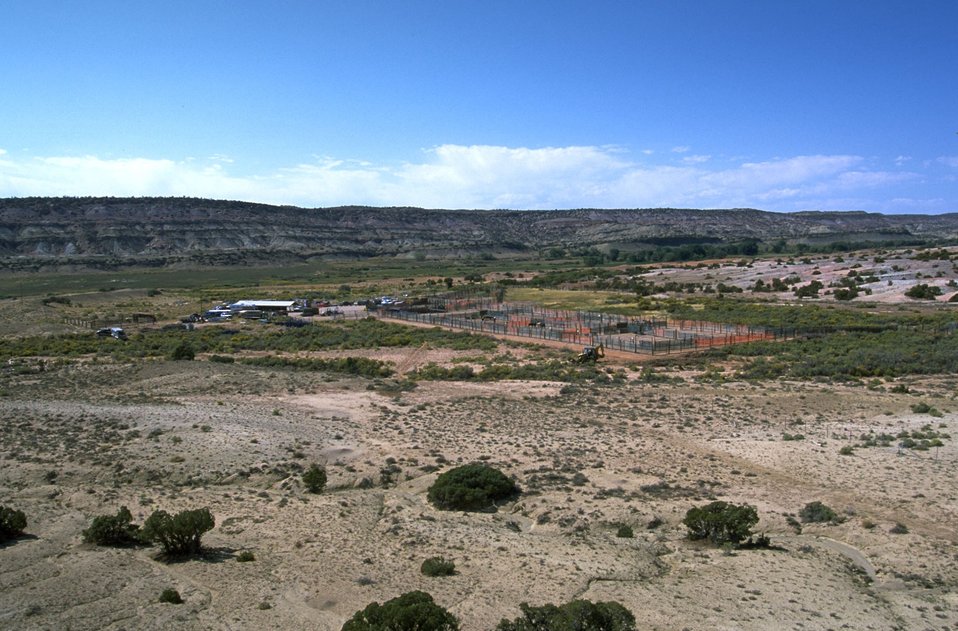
Britton Spring administrative area for holding wild horses